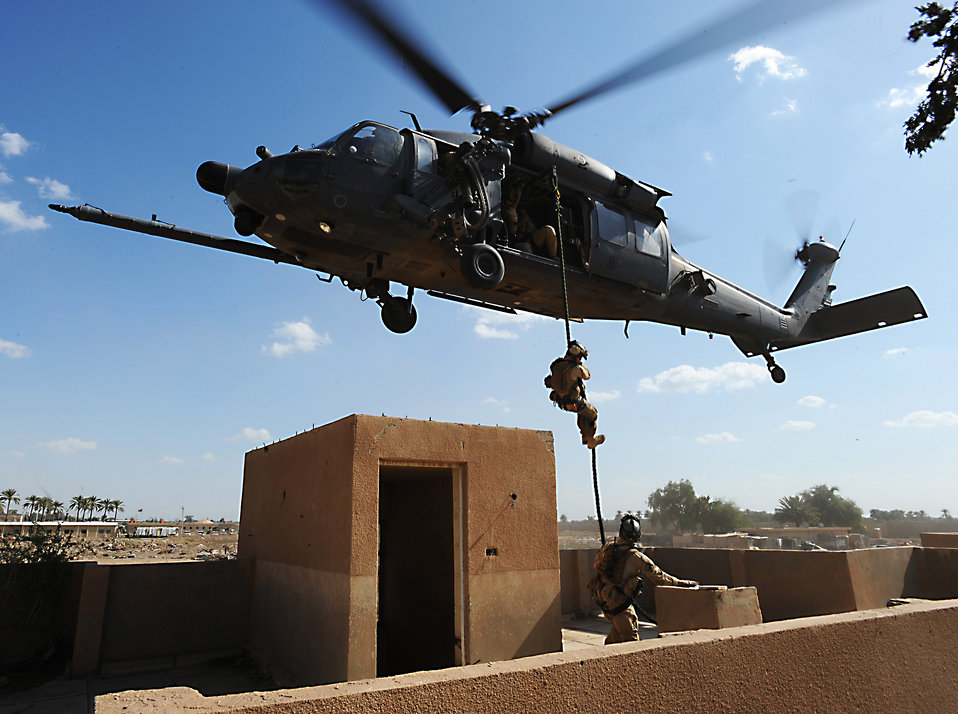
Airpower summary: HH-60 Pave Hawk

A pararescueman fast ropes from an HH-60 Pave Hawk helicopter to join a team member in a proficiency exercise outside of Baghdad, Iraq. They are assigned to the 64th Expeditionary Rescue Squadron at Joint Base Balad, Iraq.